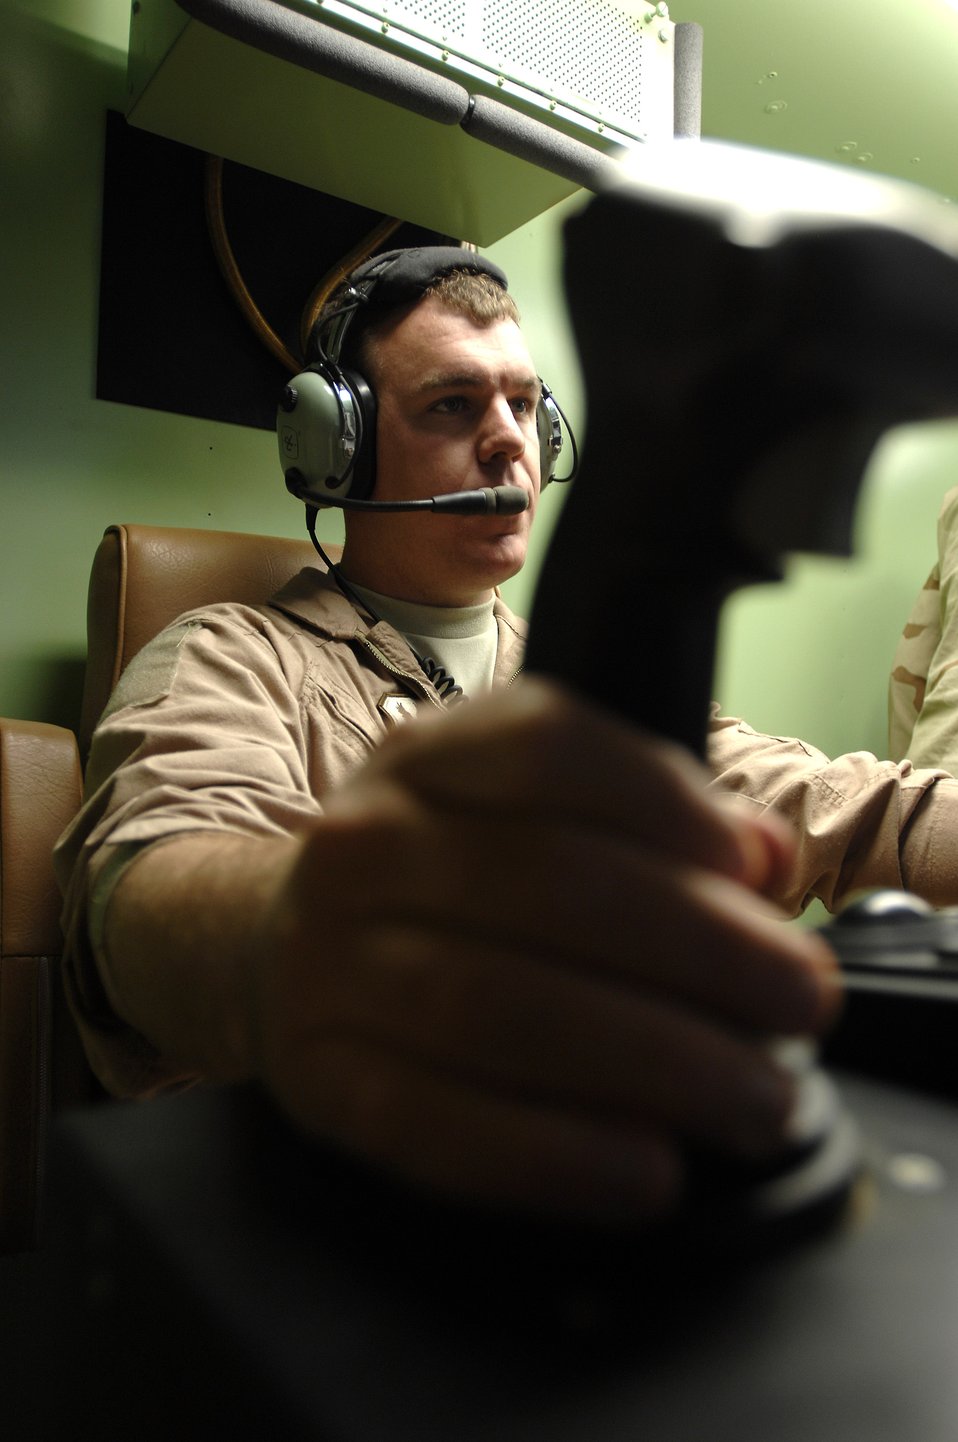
Predator test flight at Ali Air Base

Airman 1st Class William Reynolds operates the sensors on an MQ-1 Predator Unmanned Aerial Vehicle during a test flight Oct. 25 to ensure equipment functionality and gain area familiarization at Ali Air Base, Iraq. Airman Reynolds is assigned to the 432nd Aircraft Maintenance Squadron and deployed from Creech Air Force Base, Nev.